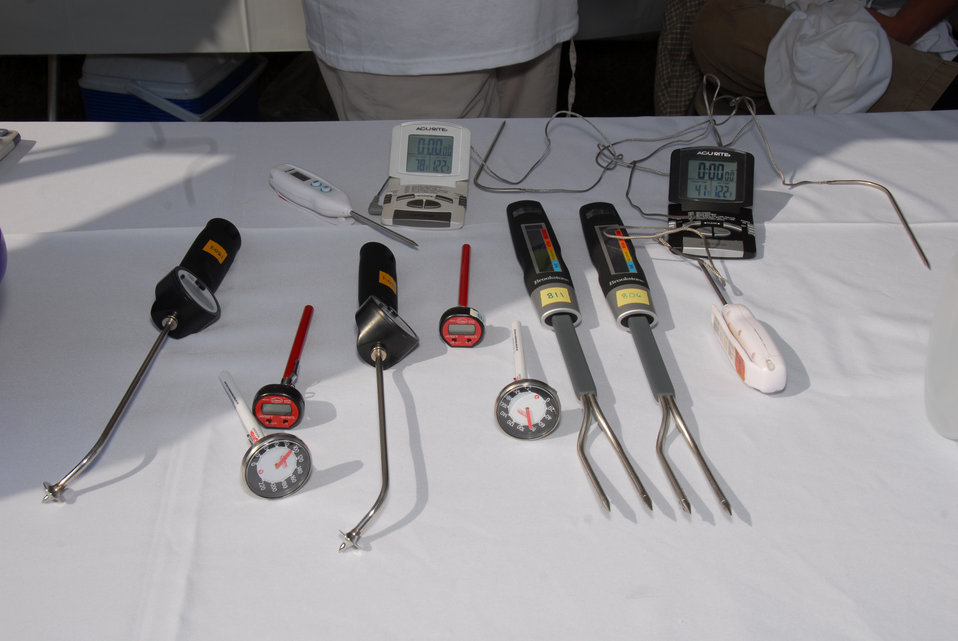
U.S. Department of Agriculture's (USDA) Food Safety and Inspection Service (FSIS) annually hosts a food safety camp that provides children with hands-on instruction about the dangers of foodborne illness and how to prevent it. This Food Safety camp was held at the USDA Beltsville, Maryland facility on May 23, 2007. FSIS had various food thermometers on display at the camp.